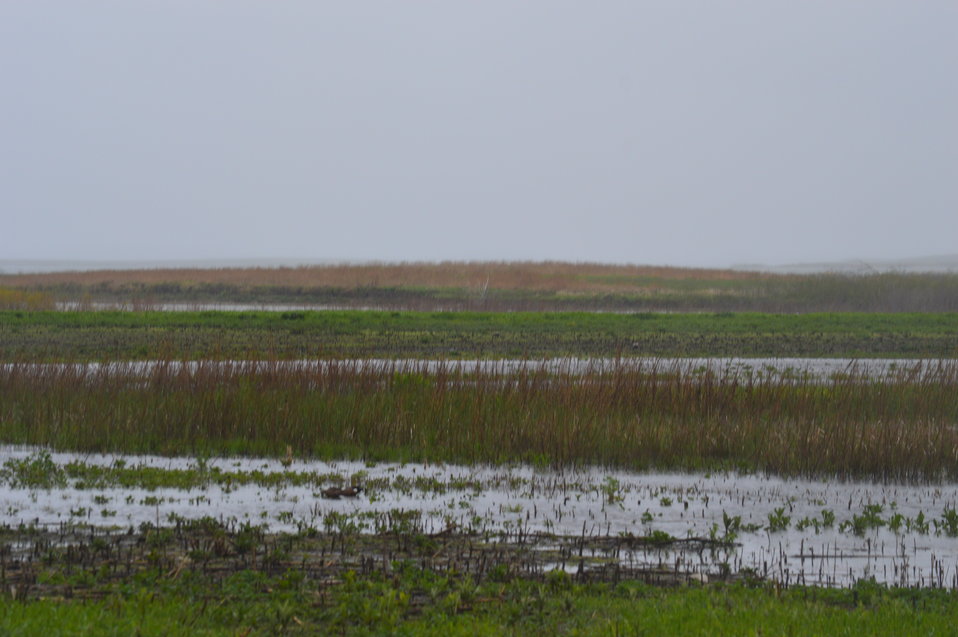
Wetlands

Scenery and wildlife and Audubon National Wildlife Refuge in North Dakota.